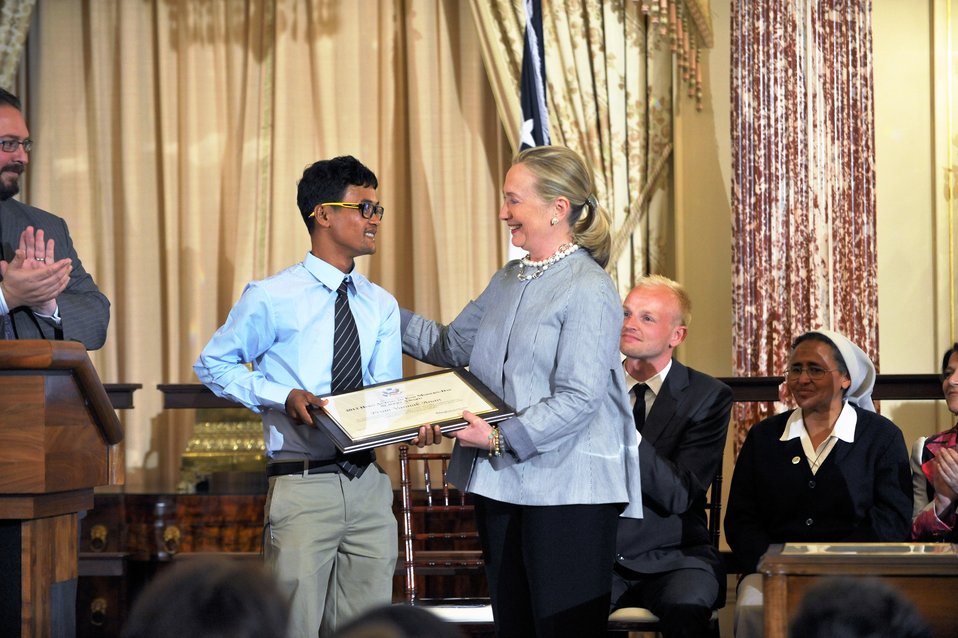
Secretary Clinton With TIP Hero Vannak Anan Prum

U.S. Secretary of State Hillary Rodham Clinton honors Vannak Anan Prum of Cambodia, a 2012 Trafficking in Persons (TIP) Report Hero, at the U.S. Department of State in Washington, D.C., on June 19, 2012.